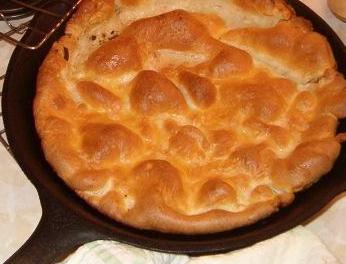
Contrast this pudding with those cooked in bakeware of tin and glass.